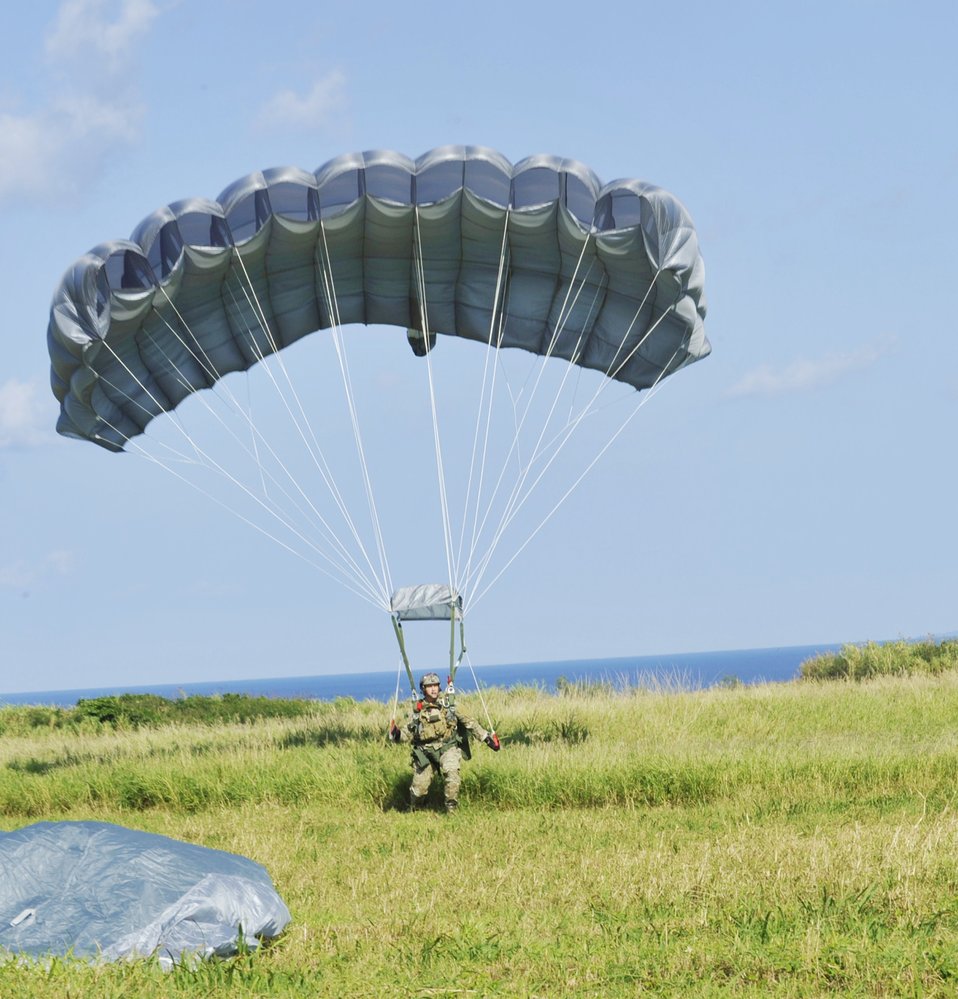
Touch down!

Master Sgt. Jeremiah Coomer lands on Ie Shima Island, Japan, after a high-altitude low-opening jump Dec. 23, 2009. The jump was part of routine training for the 320th Special Tactics Squadron, and the 31st Rescue Squadron at Kadena Air Base, Japan. Sergeant Coomer is with the 320th STS.